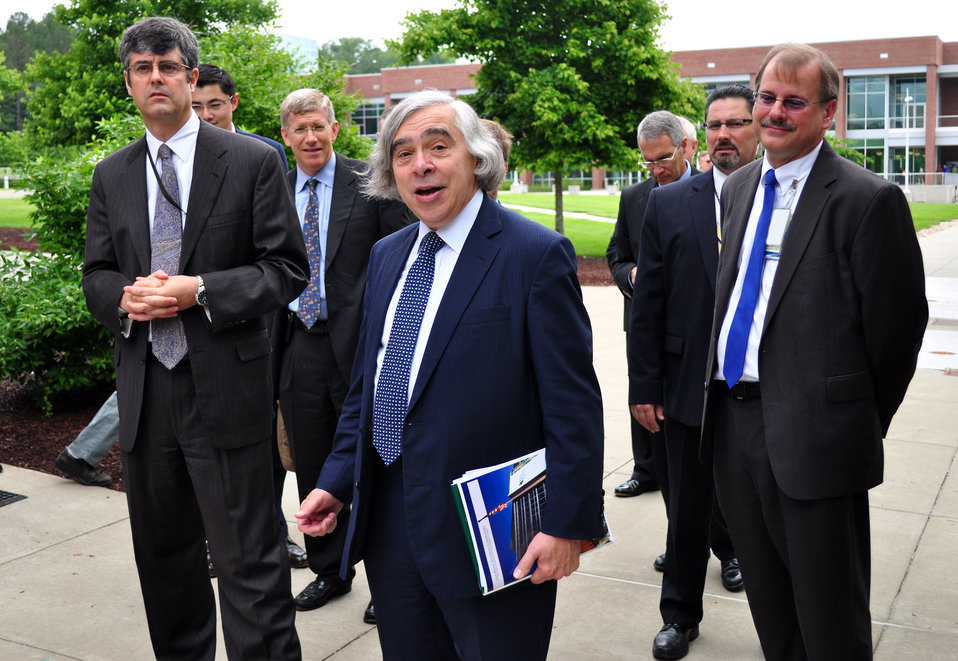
DOE Secretary of Energy Ernest Moniz in Oak Ridge

13-067 DOE photo Lynn Freeny Oak Ridge Tennessee